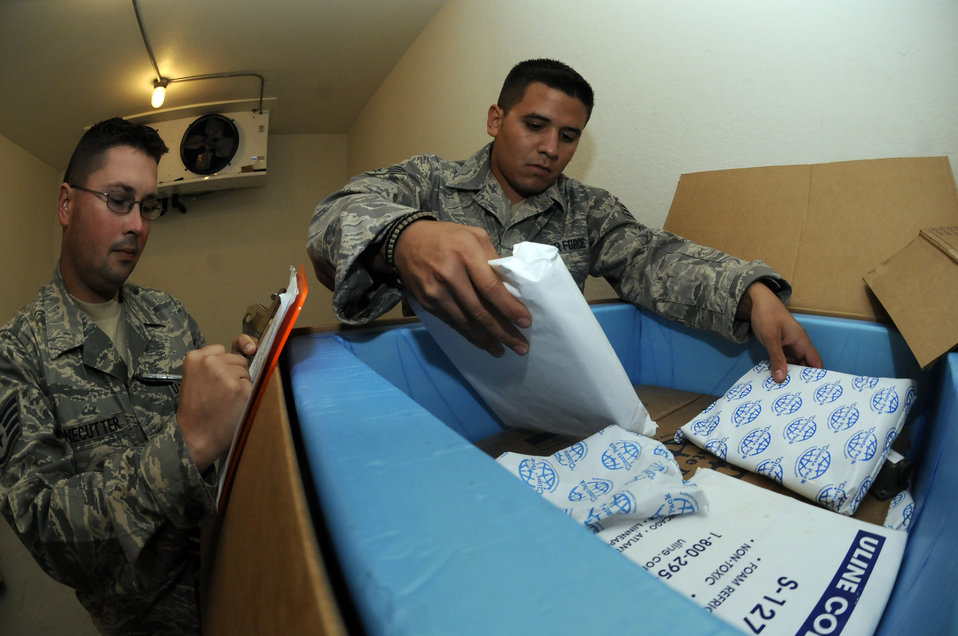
Airmen speed delivery of lifesaving medicine

Senior Airman Michael Rodriguez stacks cold bricks on top of medical supplies as Staff Sgt. Michael Bonecutter logs the reicing time Oct. 23 at an air base in Southwest Asia. The unit processes thousands of pounds of medical supplies and equipment for shipment to units in the area of responsibility. Airman Rodriguez, an 8th Expeditionary Air Mobility Squadron special handling technician, is a native of Saint John, Mich. He is deployed from Charleston Air Force Base, S.C. Sergeant Bonecutter, an 8th EAMS special handling supervisor, is a native of Pilot Grove, Mo. He is deployed from Little Rock AFB, Ark.